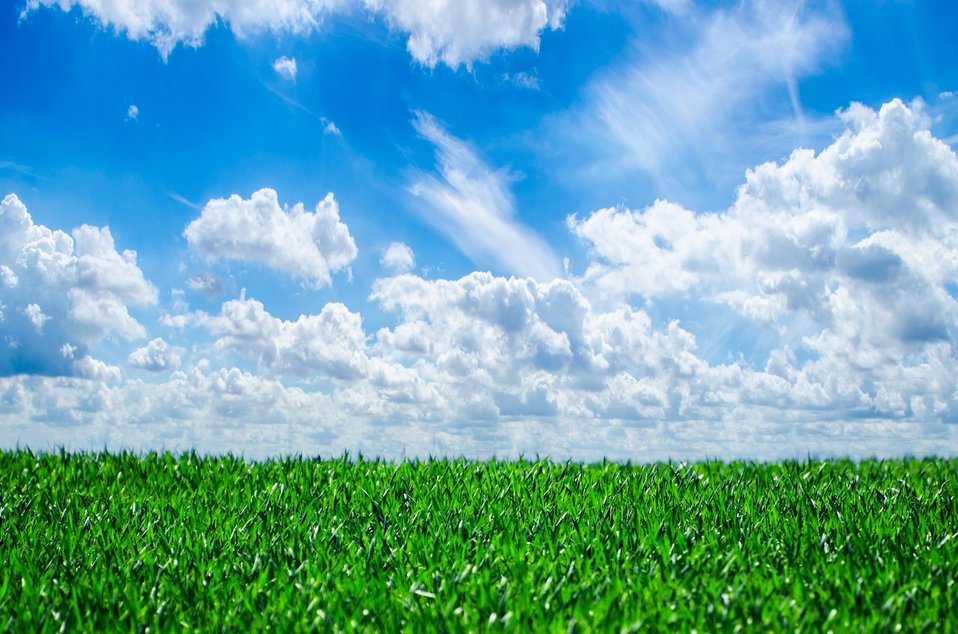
Grass and sky background.